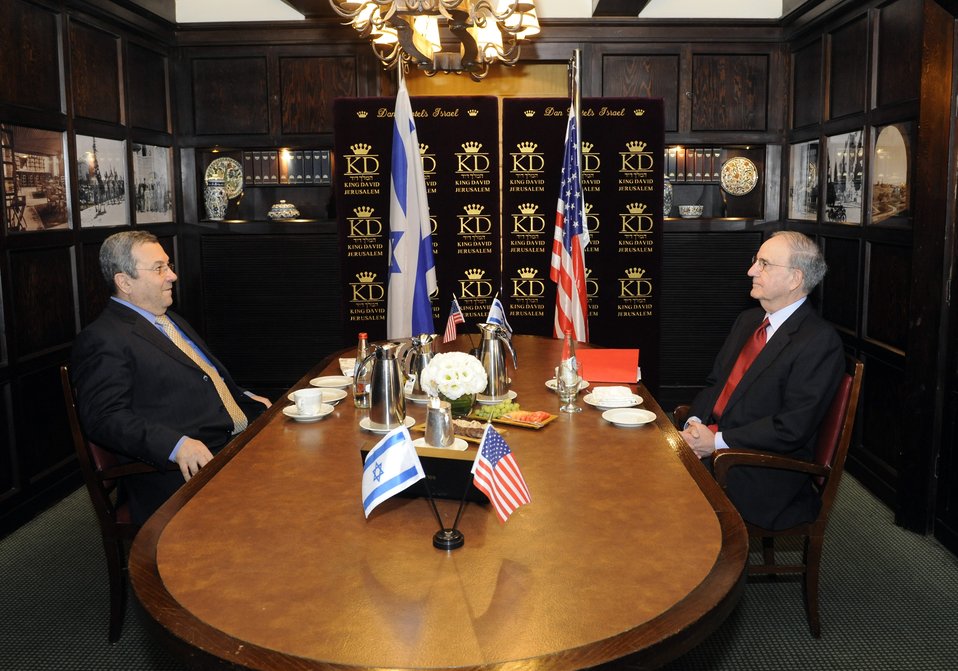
Special Envoy Mitchell With Israeli Defense Minister Ehud Barak

Special Envoy Mitchell speaks with Israeli Defense Minister Ehud Barak in Jerusalem, March 21, 2010.